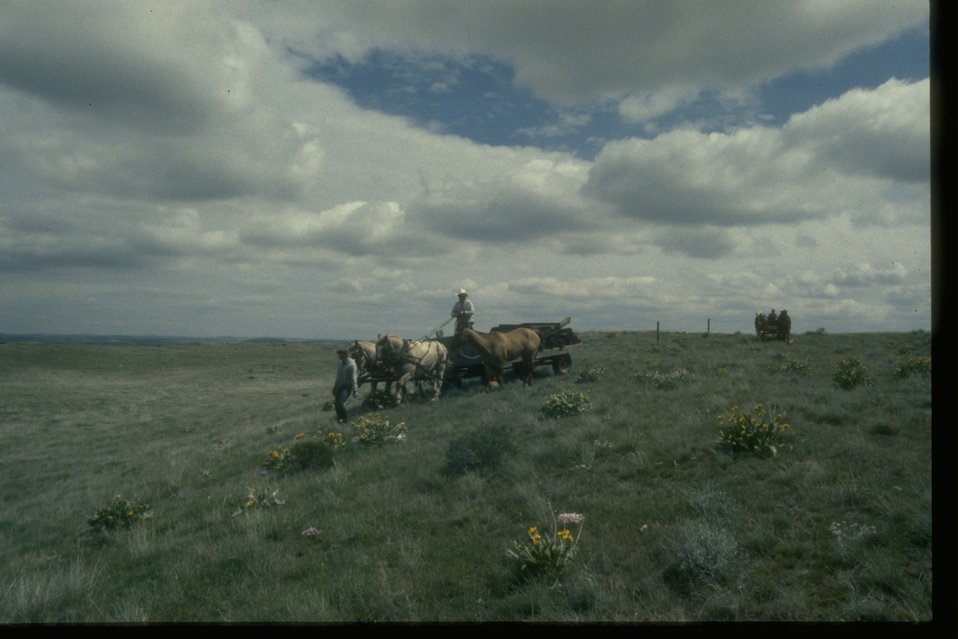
Fence removal project performed by Back Country Horsemen in the Juniper Forest, Franklin County, Washington.